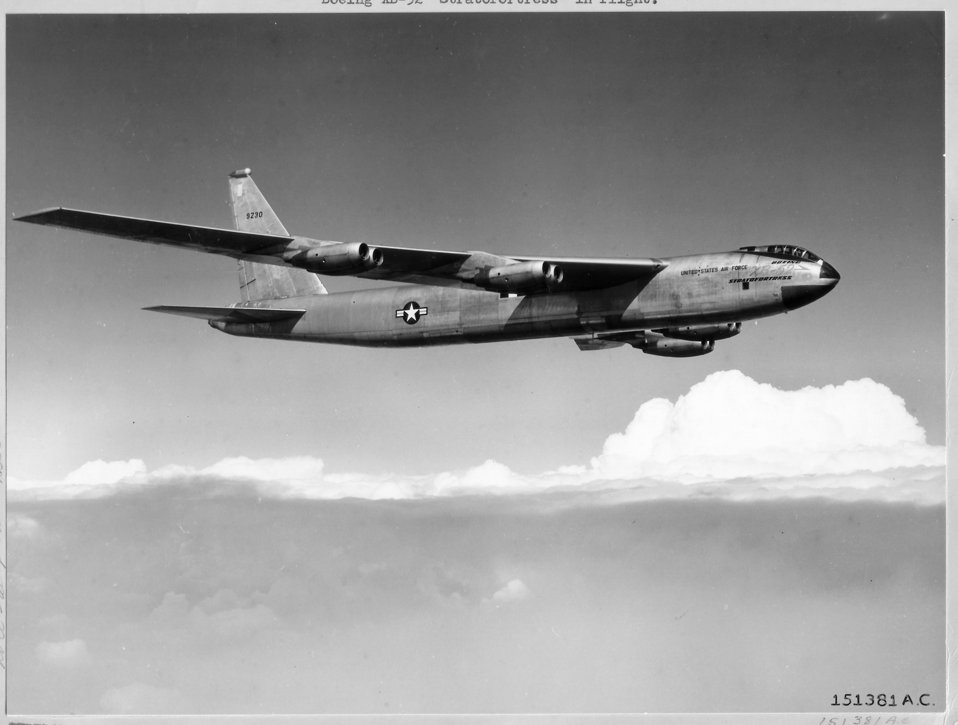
Boeing XB-52

1950's -- Boeing XB-52